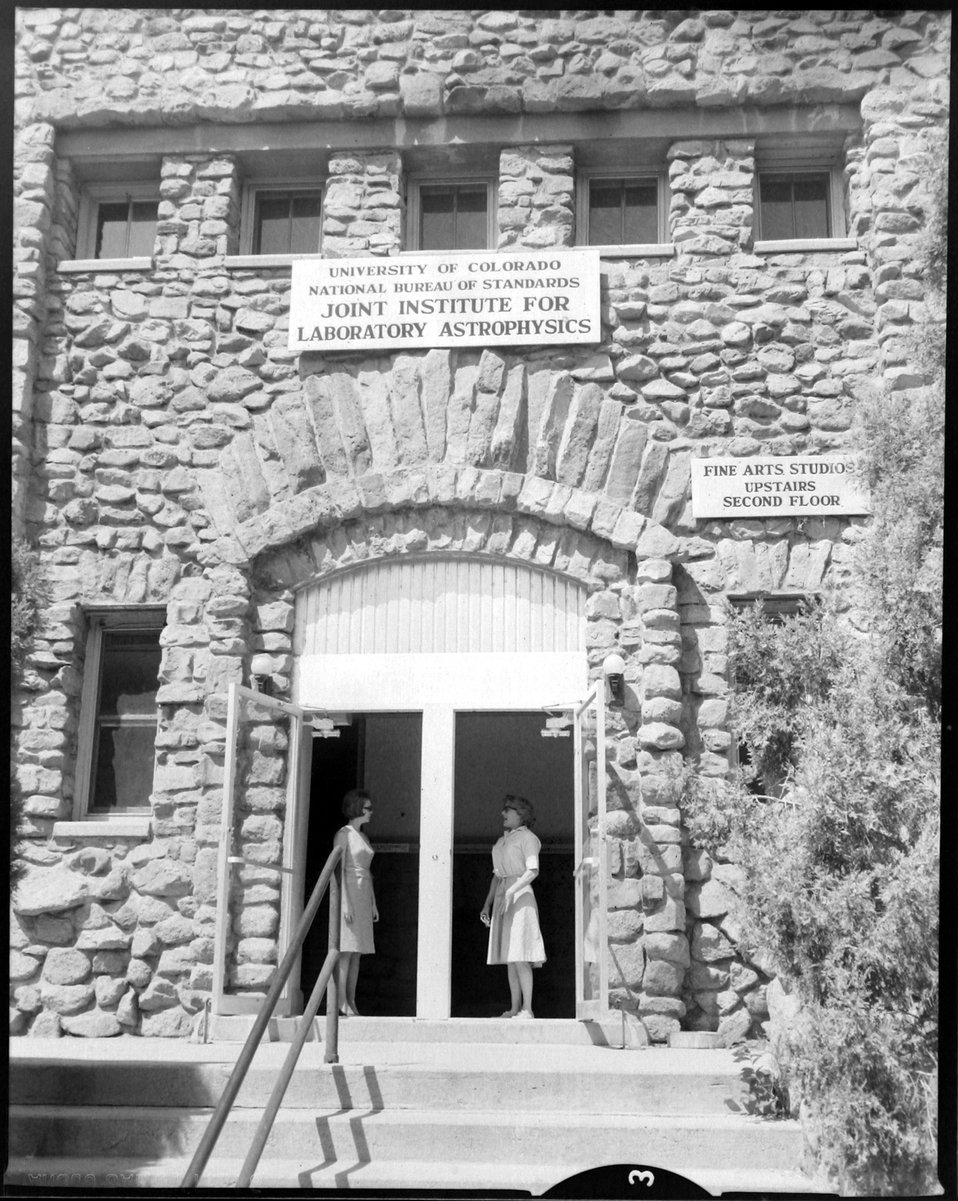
JILA

The State Armory Building in Boulder, Colorado, was the first home of JILA, the internationally recognized research establishment celebrating it's 50th anniversary this year.